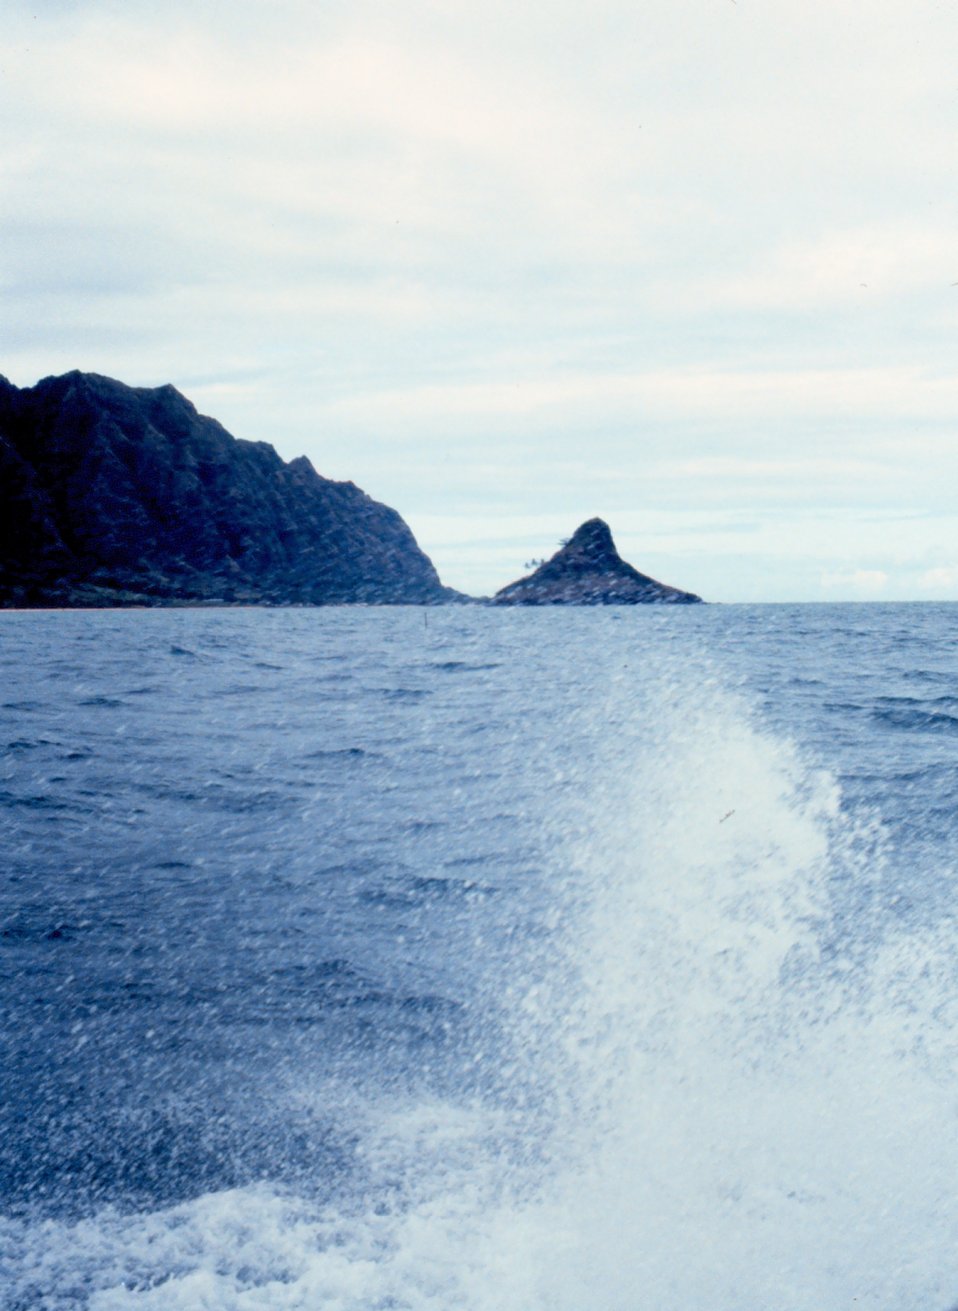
North end of Kaneohe Bay - Mokolii Island or 'Chinaman's Hat.'